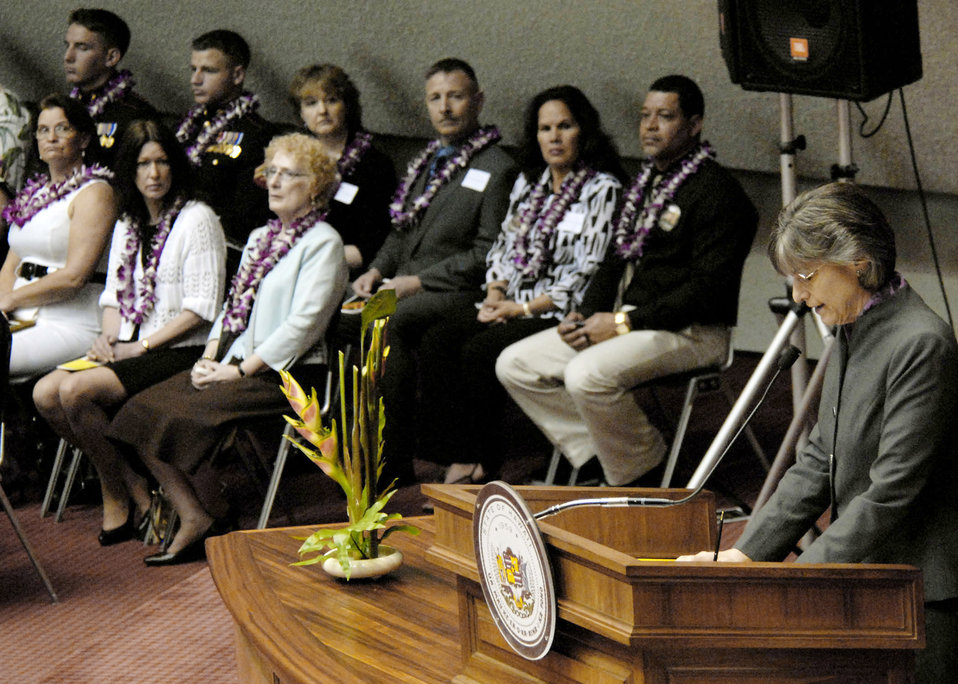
Hawaii officials honor fallen war heroes

Hawaii Governor Linda Lingle offers words of encouragement to family members, friends and co-workers of 28 fallen servicemembers who were posthumously presented the Hawaii Medal of Honor during her remarks at a special ceremony March 23, 2010, at the State Capitol in Honolulu, Hawaii.